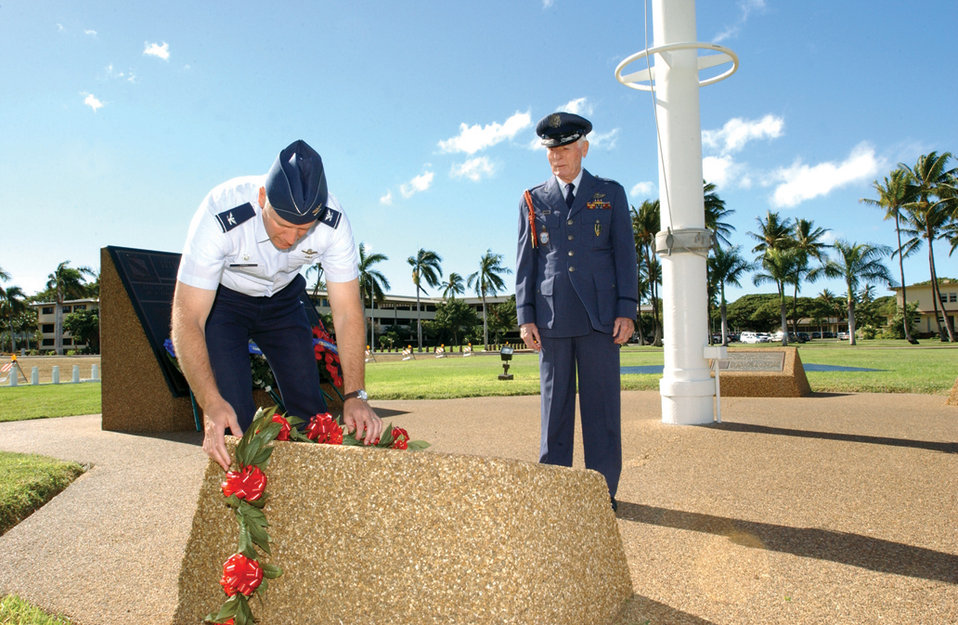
Paying tribute

HICKAM AIR FORCE BASE, Hawaii -- Col. Ray Torres places a memorial lei on a plaque commemorating the 31st Bombardment Squadron's response to the attack on Hickam Field on Dec. 7, 1941. He is joined by retired Col. Leslie Bratton, who was a B-17 Flying Fortress pilot assigned to the 31st BS and actively participated in the base response immediately following the attacks. Colonel Torres is the 15th Airlift Wing commander here.